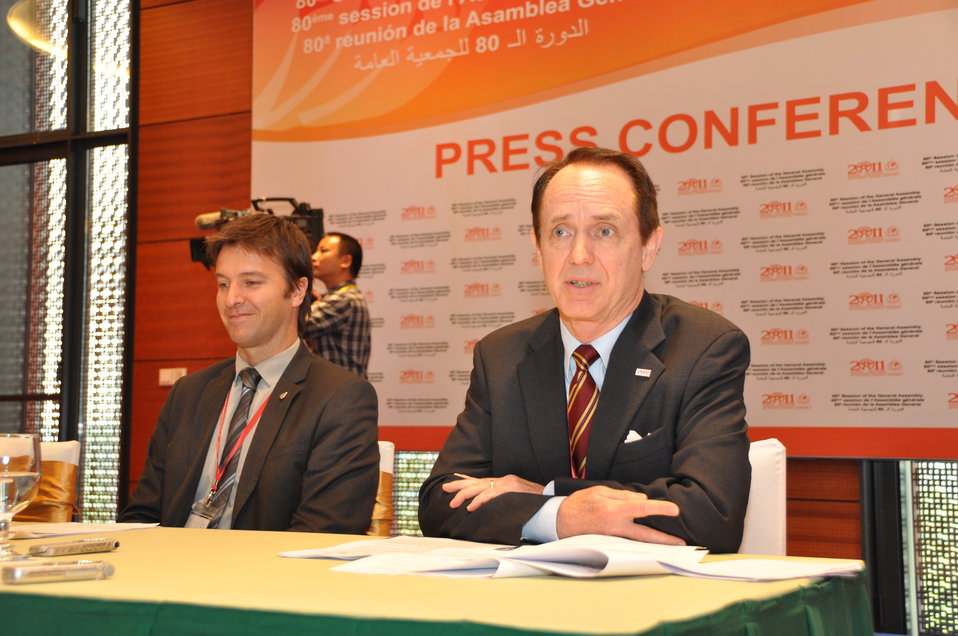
USAID MIssion Director Francis Donovan at the INTERPOL General Assembly in Hanoi, November 2011

Project Predator, an initiative to protect and save the world's last surviving wild tigers, was unveiled today at the 80th INTERPOL General Assembly, a gathering of global law enforcement support from the organization's 190 member countries.

Created by INTERPOL, Project Predator unites the efforts of police, customs and wildlife officials in the 13 countries in Asia where wild tigers can still be found. This new partnership under the Global Tiger Initiative brings together officials from the 13 tiger range countries, the U.S. Agency for International Development (USAID), the UK's Department for Environment, Food and Rural Affairs (Defra), the World Bank, the Smithsonian Institution and INTERPOL.